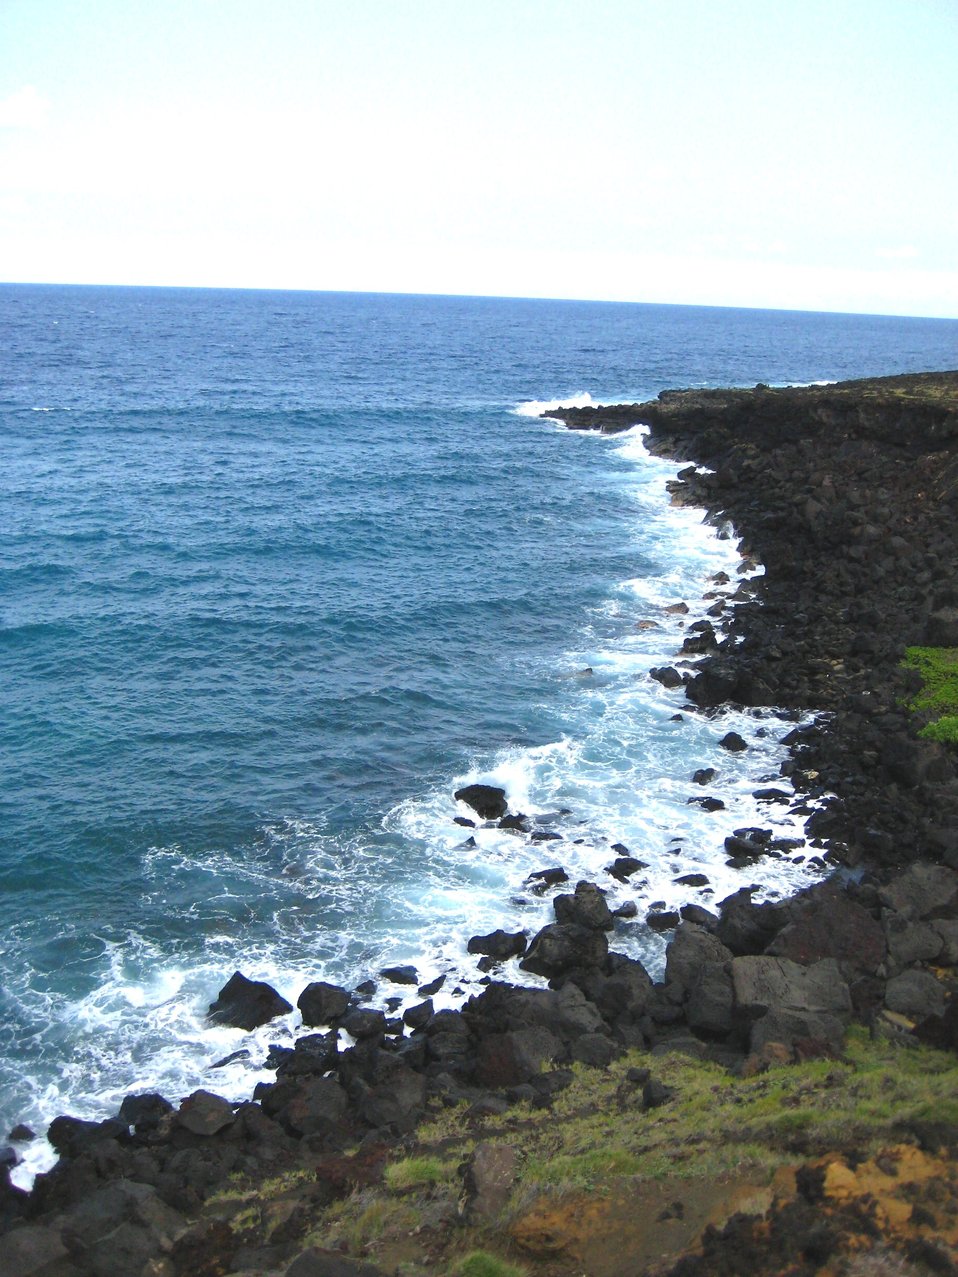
Basaltic boulders doing battle with the sea. Inevitably the sea will win.